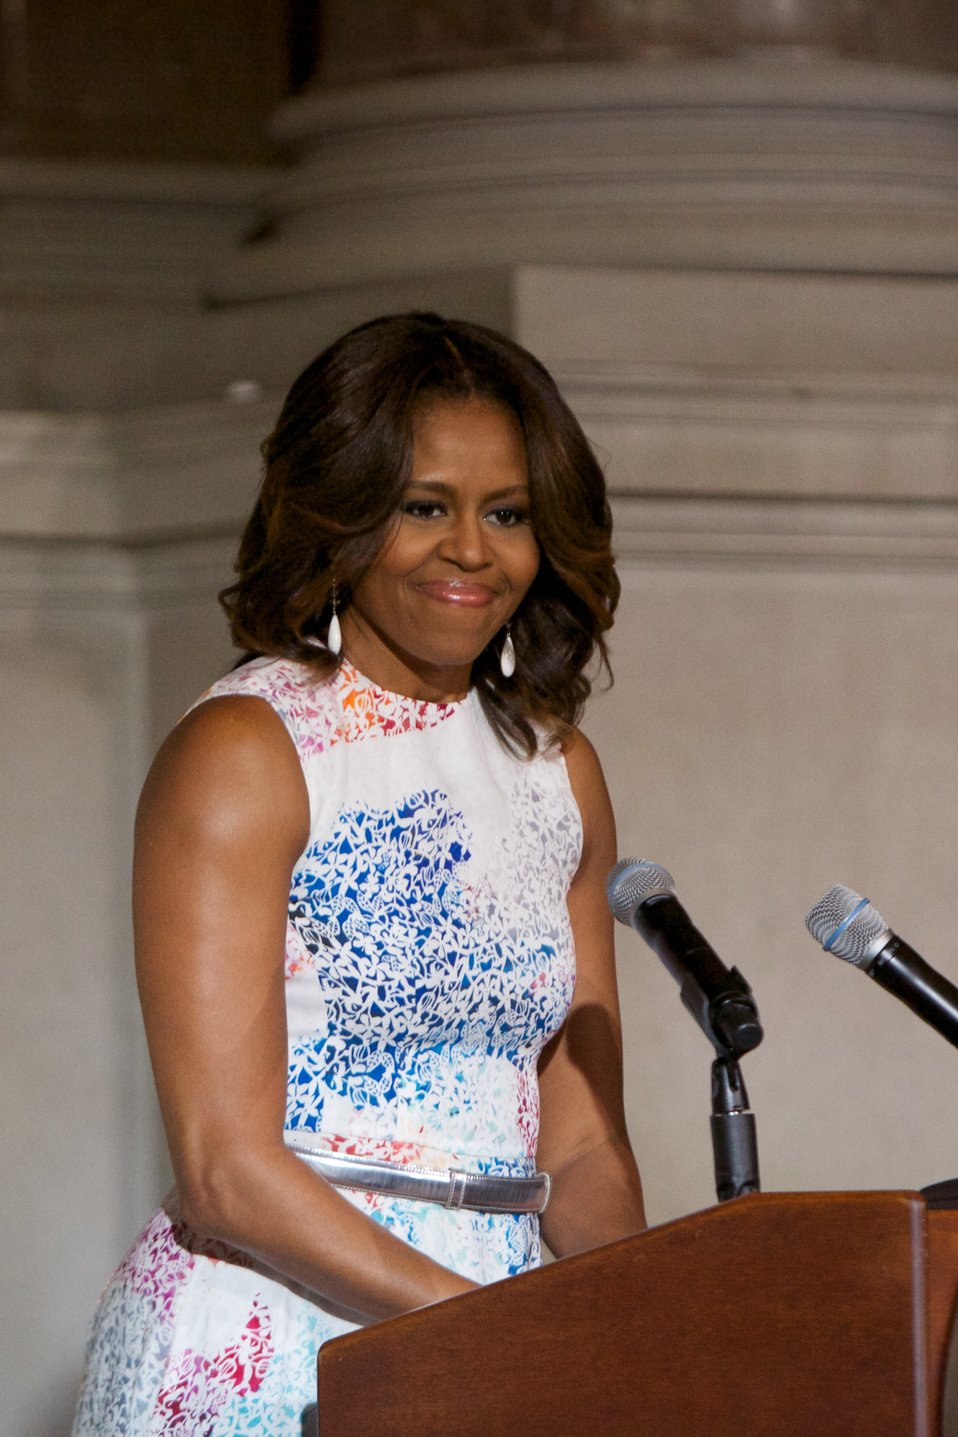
Naturalization Ceremony with Michelle Obama